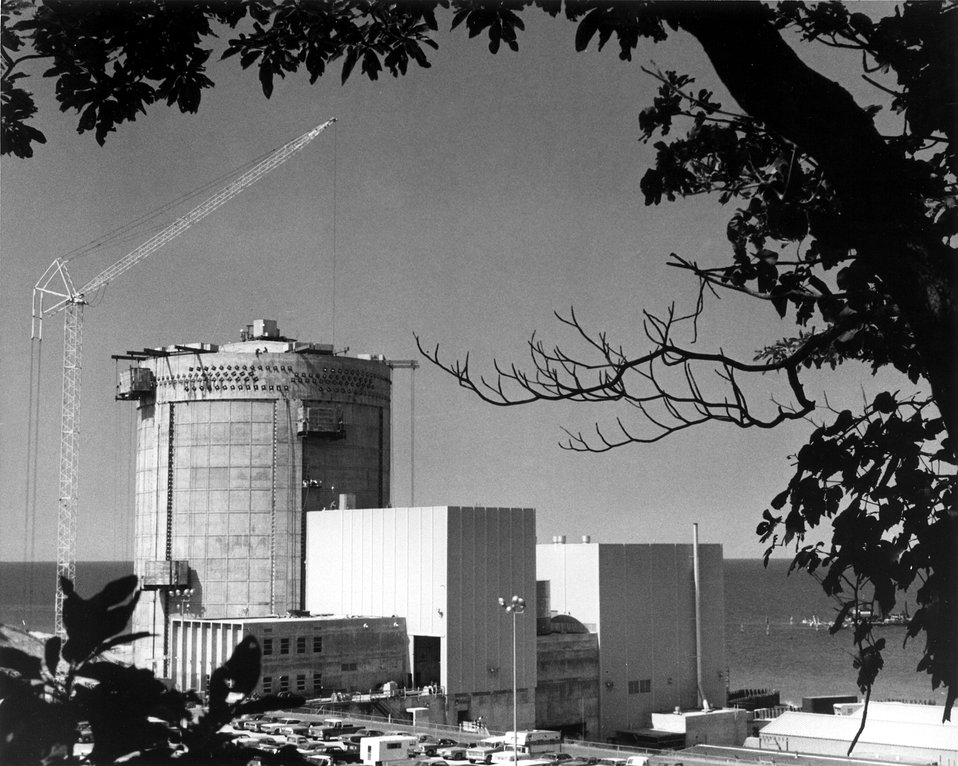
Palisades Nuclear Power Station operated by Consumers Power Company at South Haven, Michigan. Circa 1970.